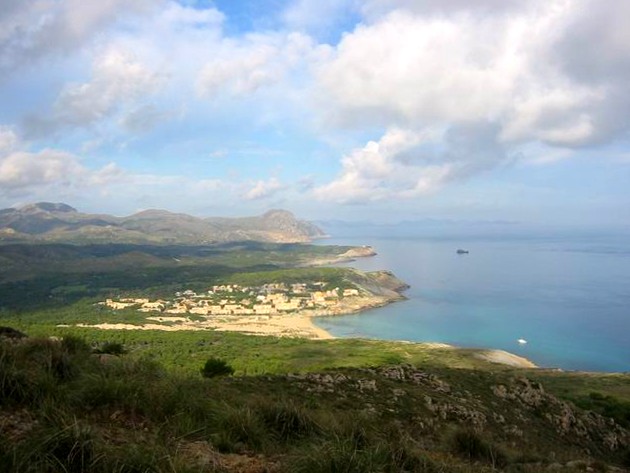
Blick auf die Cala Mesquida vom östlich der Bucht gelegenen Aussichtspunkt mit dem Talaia de Son Jaumell. Eignes Bild.